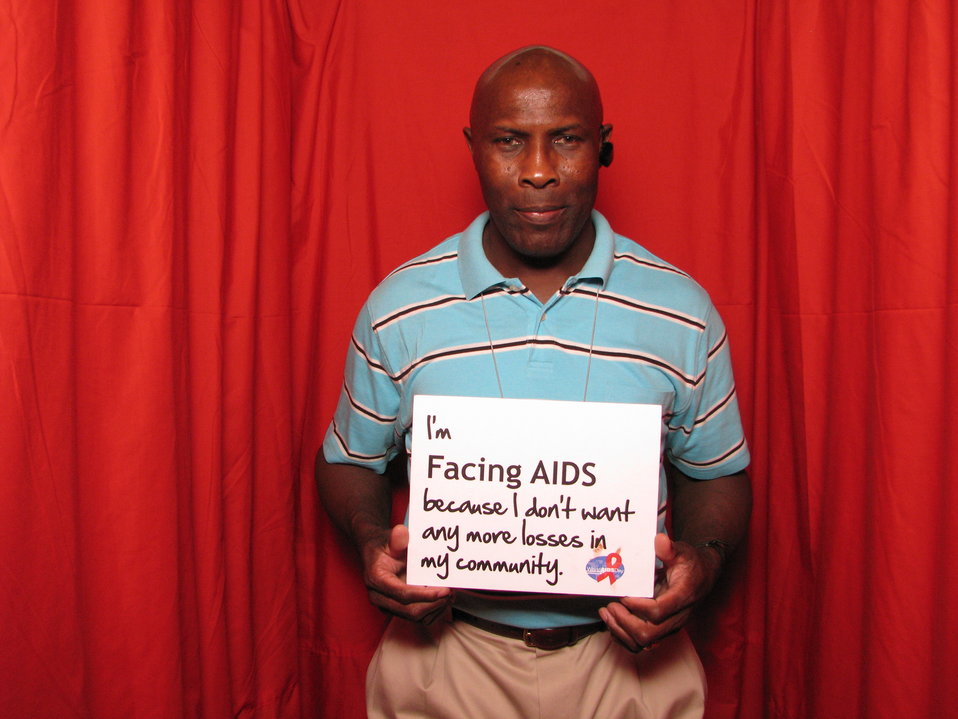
I'm FACING AIDS because I don't want any more losses in my community.

From the AIDS.gov photo booth at the U.S. Conference on AIDS, September 2010 (Orlando, FL).